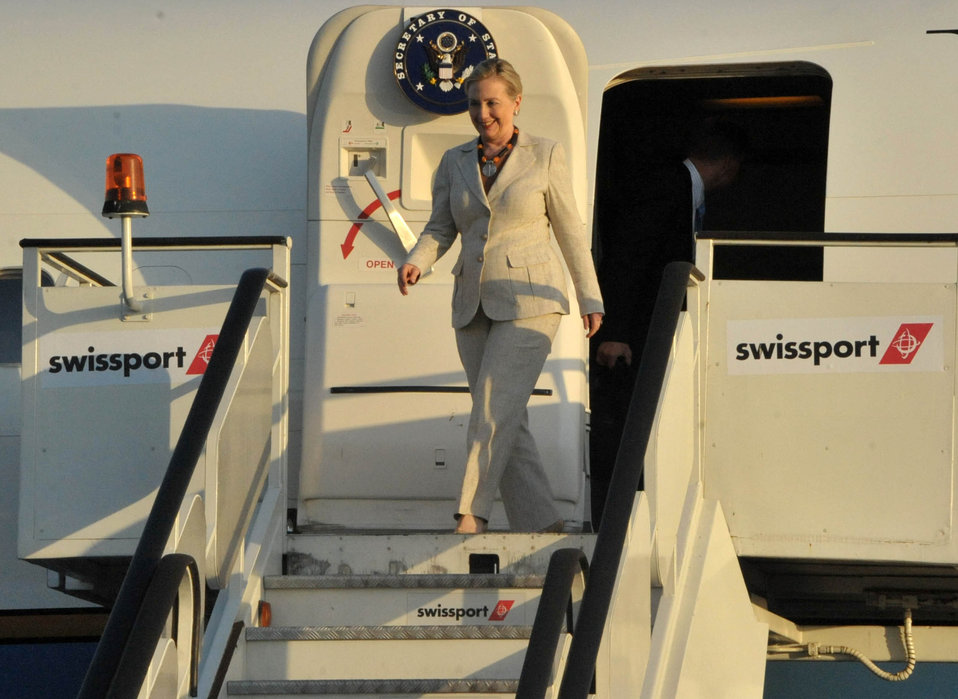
Secretary Clinton Steps Off the Plane

U.S. Secretary of State Hillary Rodham Clinton steps off the plane after arriving in Dar es Salaam, Tanzania, on June 11, 2011.